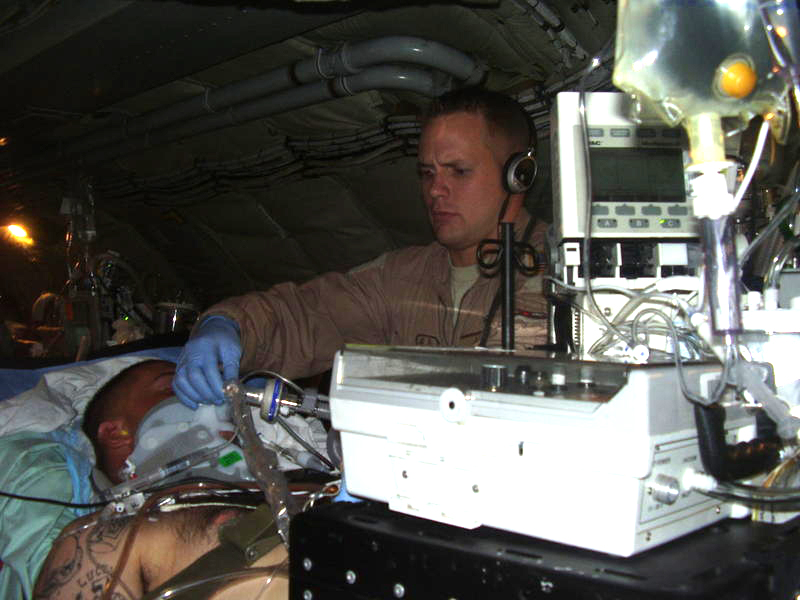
Air care

Flying a military medical evacuation flight is where Tech. Sgt. Corey Hellmann's medical expertise is most needed. As a reservist from the 920th Aeromedical Staging Squadron at Patrick Air Force Base, Fla., he is part of a critical care air transport team. Patients are under his care during their evacuation flights out of the war zone. Sergeant Hellmann has volunteered twice for the war effort over the last couple of years and has helped hundreds of wounded Soldiers and Airmen.